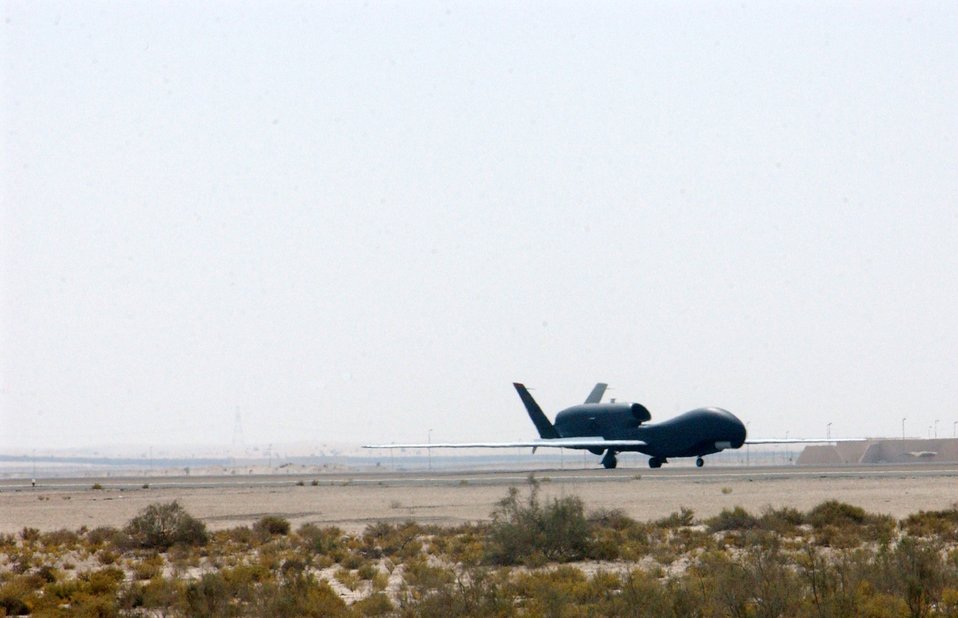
Global Hawk, global mission

A Global Hawk unmanned aerial vehicle lands at a deployed location in Southwest Asia following a mission Oct. 3. The Global Hawk provides Air Force and joint battlefield commanders near-real-time, high-resolution, intelligence, surveillance and reconnaissance imagery. The Global Hawk is currently supporting operations Iraqi Freedom and Enduring Freedom from this deployed location.